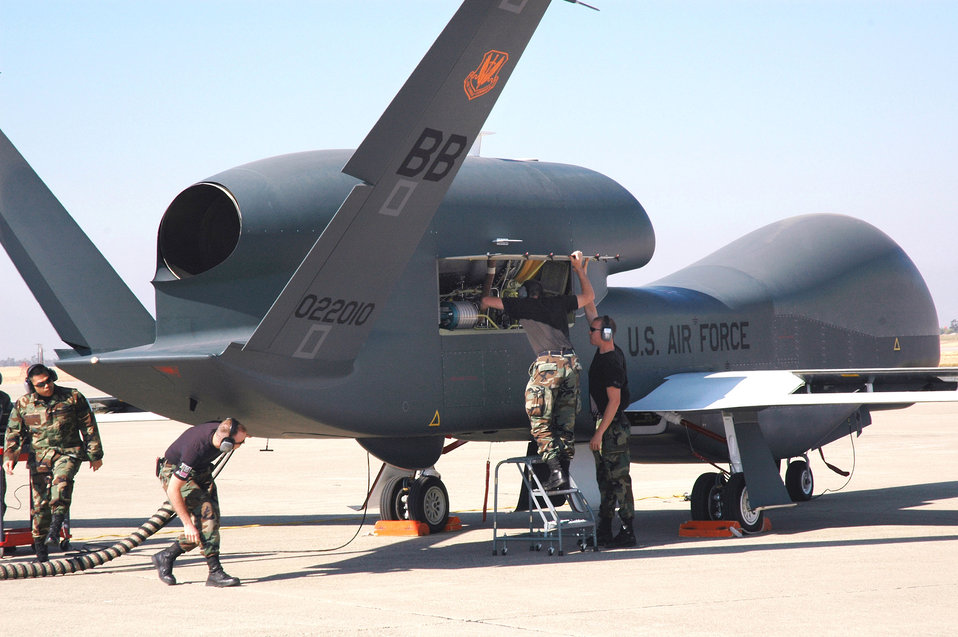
Beale tests Global Hawk

Avionics specialists with the 12th Aircraft Maintenance Unit prepare a Global Hawk for a runway taxi test at Beale Air Force Base, Calif. The Global Hawk is scheduled to begin flying at Beale in early November. The program is a total force effort with the Air Force Reserve's 13th Reconnaissance Squadron assisting active duty personnel.